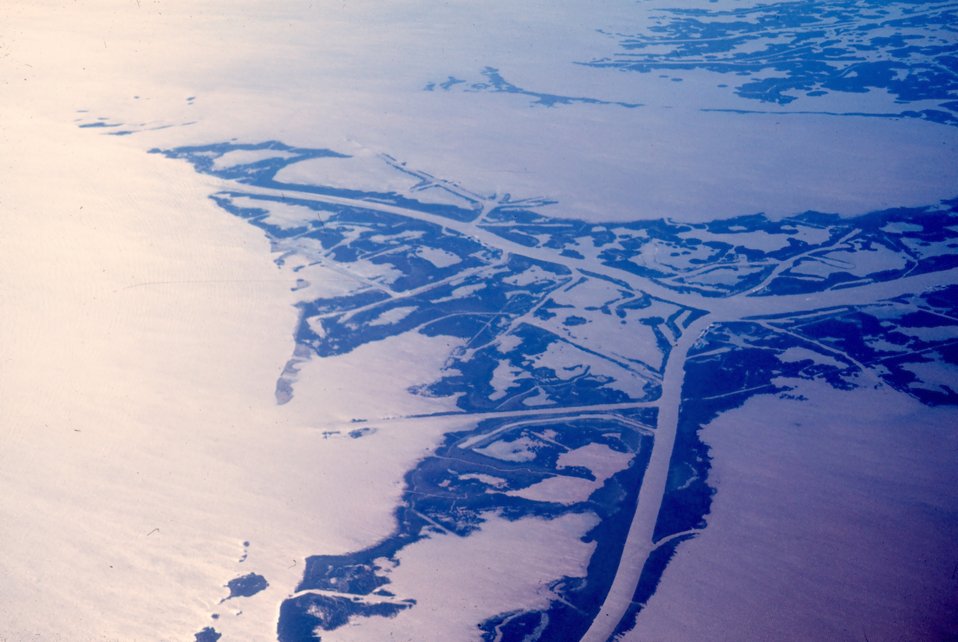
A bird's eye view of a bird's foot delta - the Passes of the Mississippi River